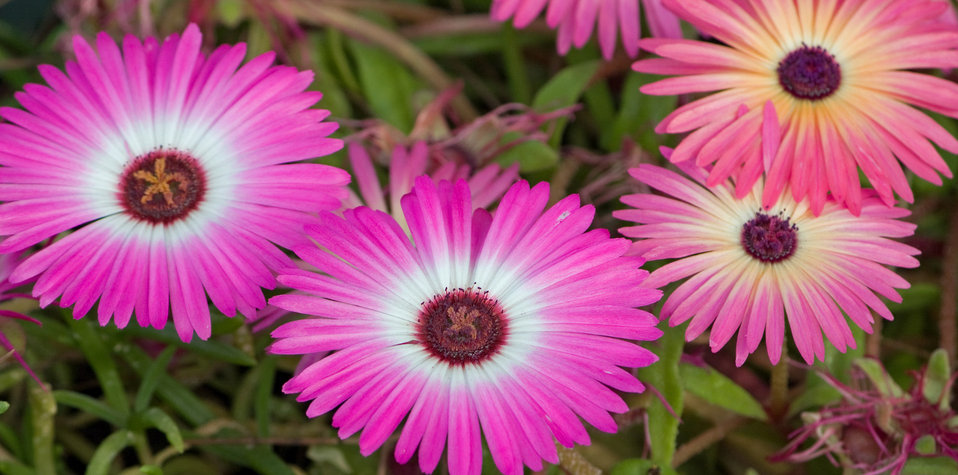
Pink flowers

Beautiful pink flowers in close-up.